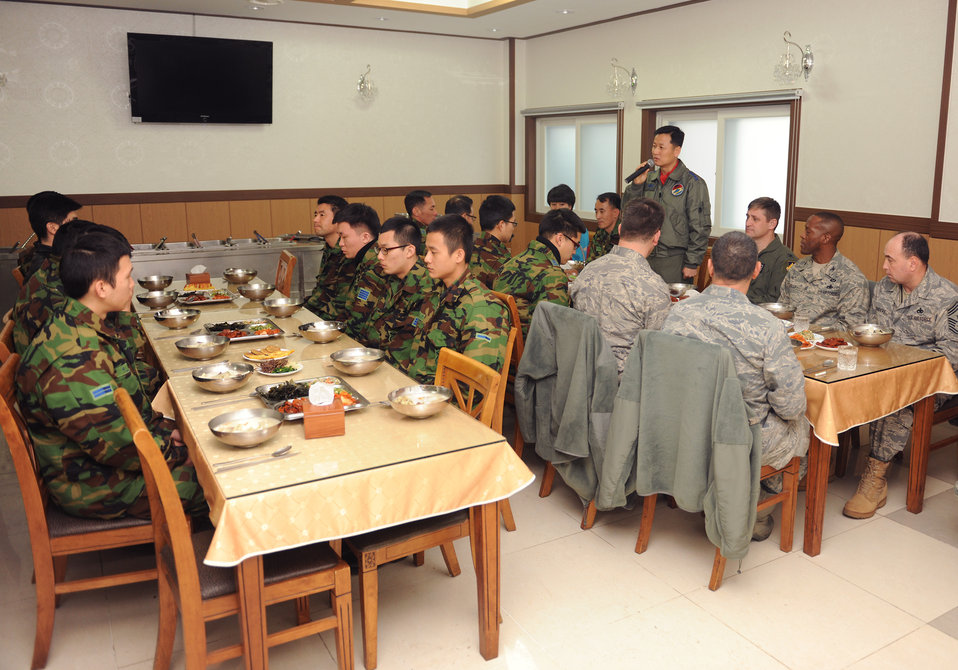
S. Korean Lunar New Year

South Korean air force Col. Jung Sang-Hwa speaks to 8th Fighter Wing and South Korean air force 38th Fighter Group airmen during a Lunar New Year ceremony Feb. 3, 2011, in the South Korean air force base exchange. The combined 8th FW and 38th FG ceremony included a memorial service, ceremonial bowing, a traditional Korean breakfast and traditional games. Colonel Sang-Hwa is the 38th Fighter Group commander.